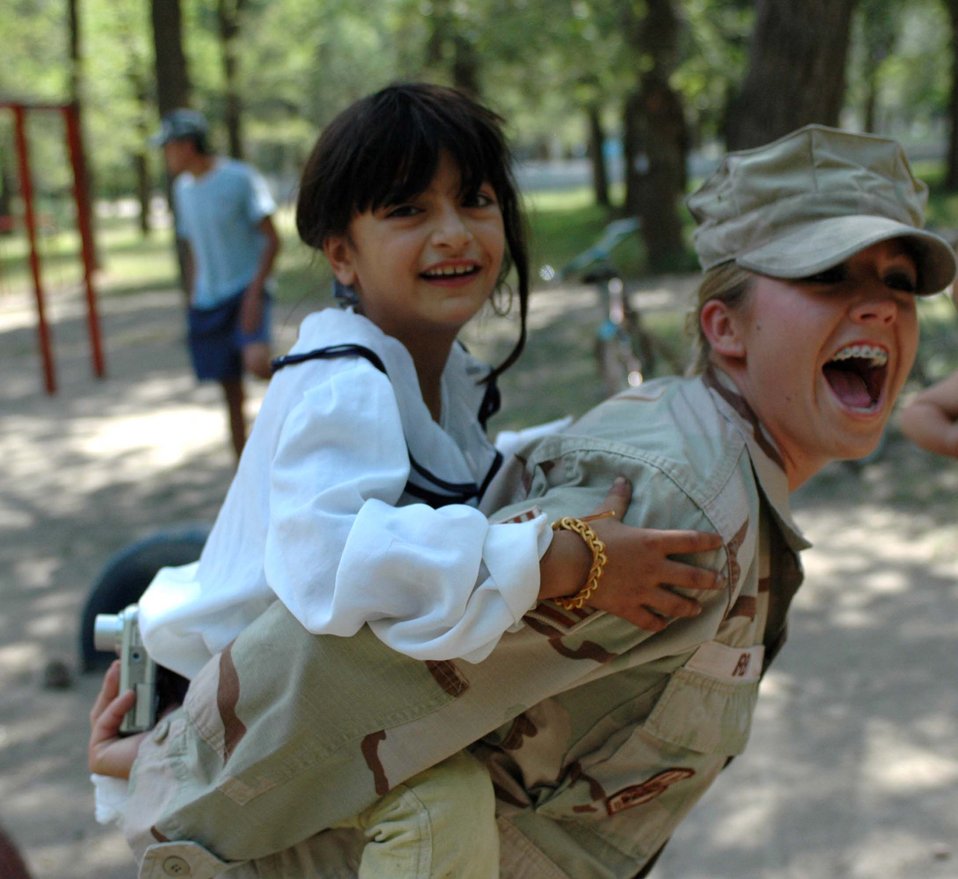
376th ESFS dedicates new children's playground

Senior Airman Emily Irby, 376th Expeditionary Security Forces Squadron, gives a local child a piggyback ride during the dedication ceremony for a new children's playground at Oktobersky Village, Kyrgzstan. Members from the 376th Air Expeditionary Wing at Manas Air Base, Kyrgzstan, were on hand to dedicate the playground, built by members of the 376th ESF and Civil Engineer squadrons. Airman Irby is deployed from the 917th Security Forces Squadron, Barksdale Air Force Base, La.